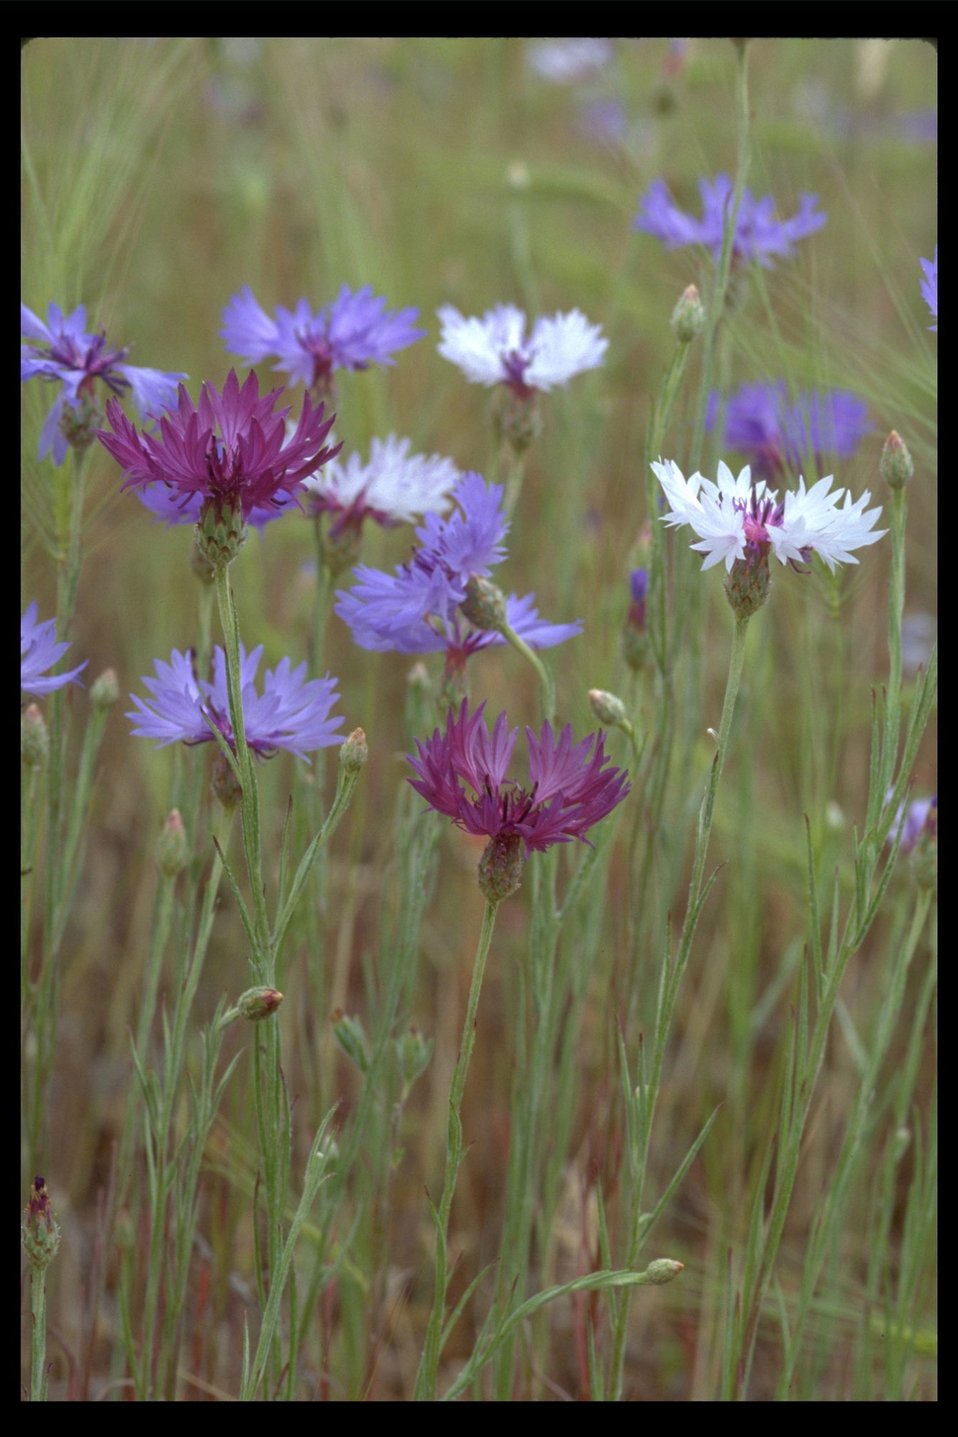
Bachelor's Button (Centaurea cyanus) found in Sam's Valley along Beagle Road.